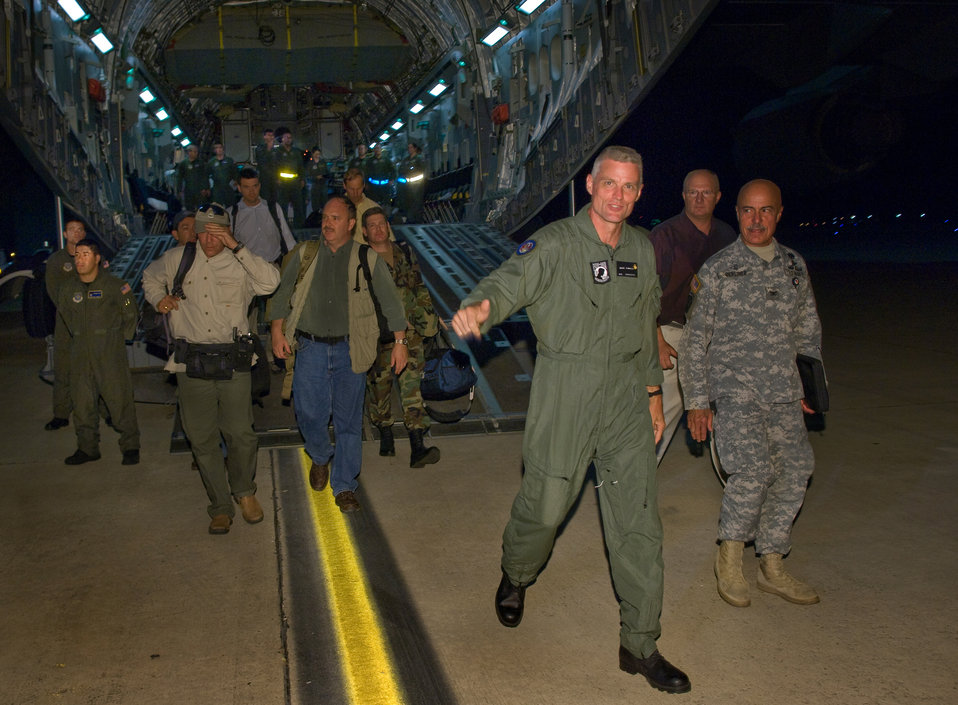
Released from captivity

Former hostage Keith Stansell (in flight suit) steps off the ramp of a C-17 Globemaster III onto U.S. soil July 2 at Lackland Air Force Base, Texas. He spent five years in captivity with two other contractors, making them the longest-held American hostages at the time.